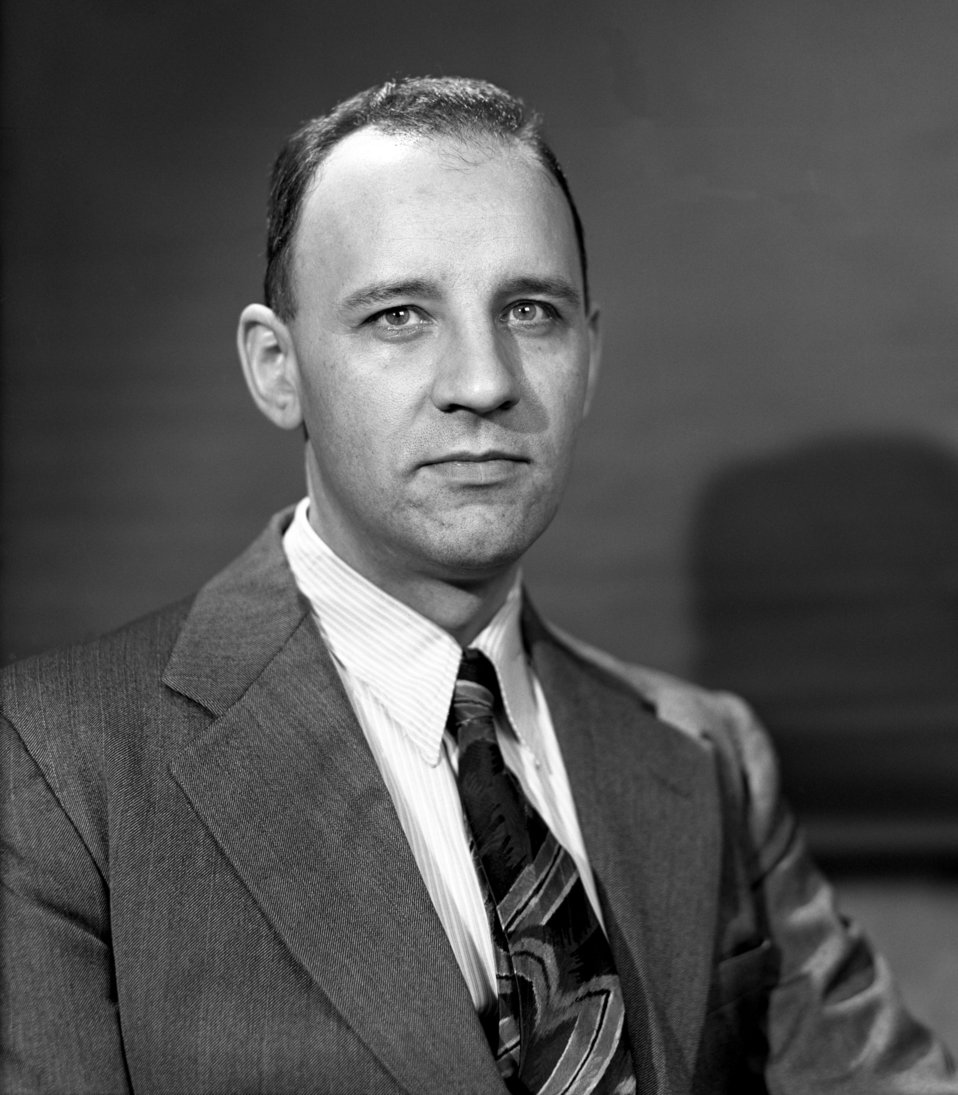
Mr. Karze Oak Ridge Symphany 1947

3277-1 DOE photo Ed Westcott 1-15-1947 Oak Ridge Tennessee